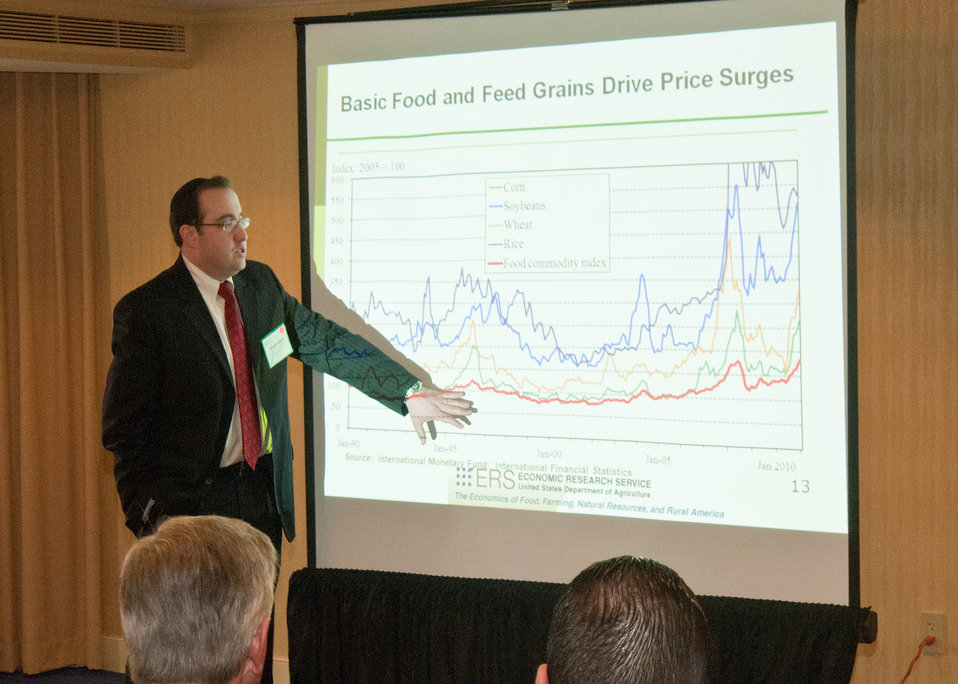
Ephraim Leibtag, PhD., Deputy Director for Research Foods and Economics Division, Economic Research Service explained food prices and retail food markets during the “Food Price Outlook Special Session” at the World Agricultural Outlook Board Forum in Crystal City, VA, on Thursday, February 24, 2011. The theme of this year’s World Agricultural Outlook Board Forum is, “Today’s Strategies and Tomorrow’s Opportunities.” The forum is an opportunity for the U.S. Department of Agriculture to learn as well as to inform. Dialog and feedback are critical to understanding the issues that are important to agriculture.